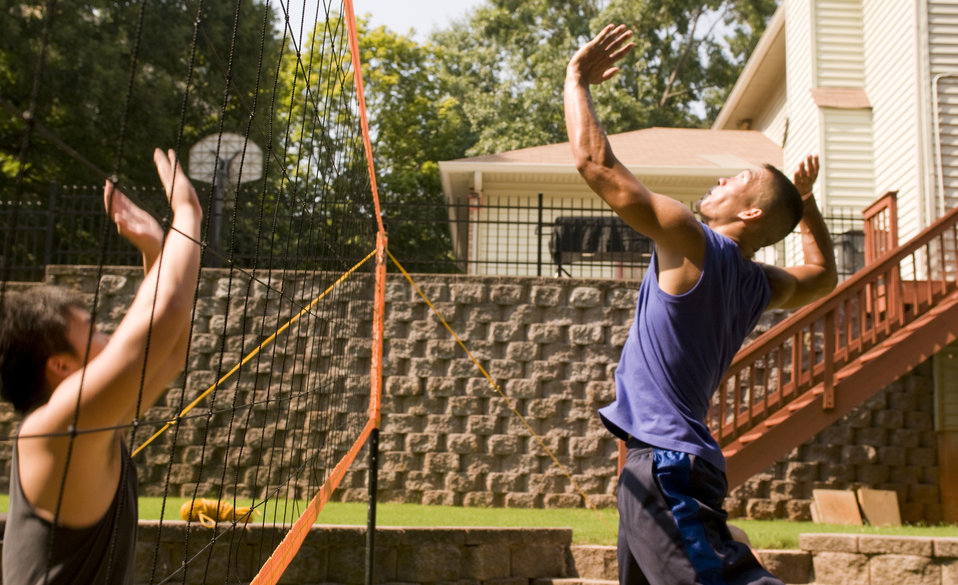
This image depicts two young men on a volleyball court, who were playing a casual one-on-one game. The man at right, wearing a bright blue shirt, was captured as he was about to spike the ball over the net, while the man at left, wearing his darly-colored top, was setting up, getting ready to defend the oncoming speeding ball. Being that this was an outdoor game, sunscreen had been applied to their sun-exposed skin. Hopefully, they'd packed, or had access to some drinking water, which would keep them hydrated in the heat.